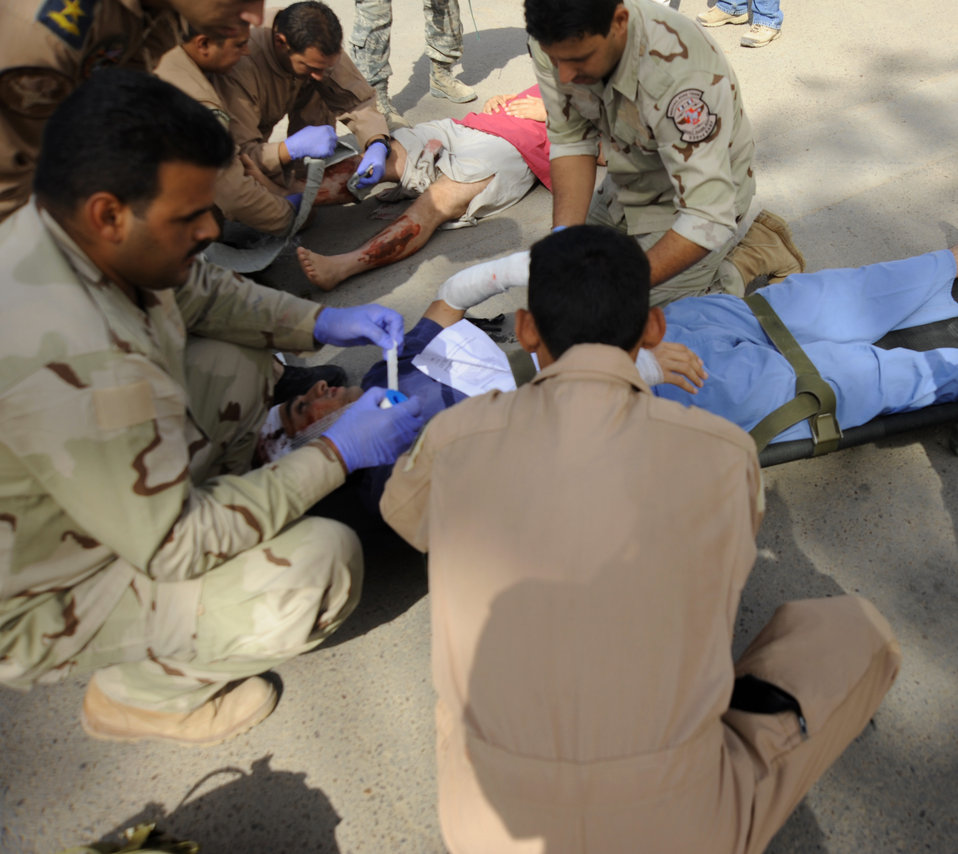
Iraqi forces practice lifesaving measures

Member of the Iraqi military provide medical treatement to a simulated wounded person during an exercise May 20, 2010, at Joint Base Balad, Iraq. Iraqi forces from Al-Muthana, Camp Taji and New Al-Muthana participated in training that demonstrated their abilities to assess and treat different conditions that may happen in a combat environment.